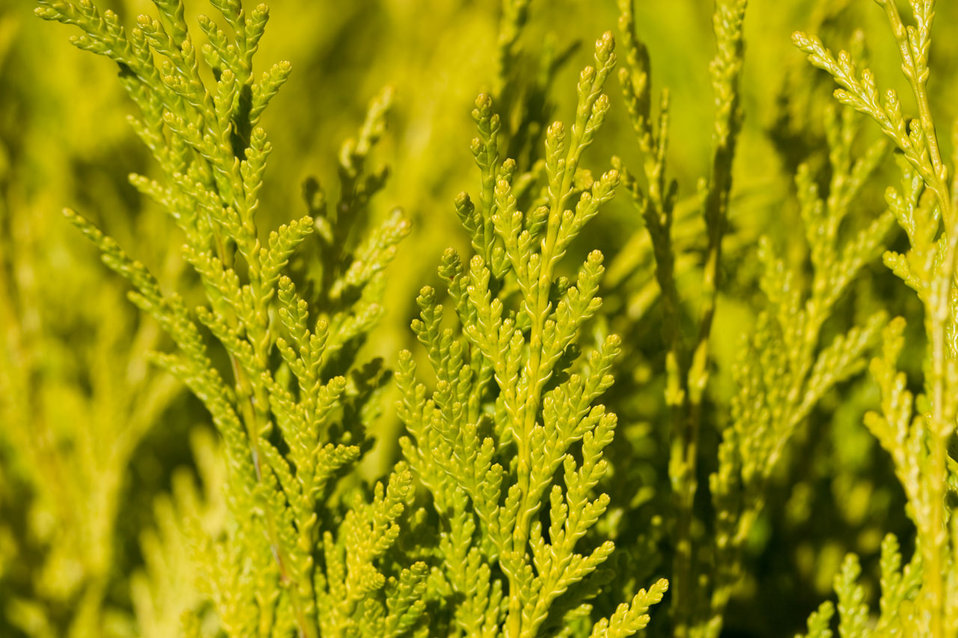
Thuja

New fresh thuja branches.